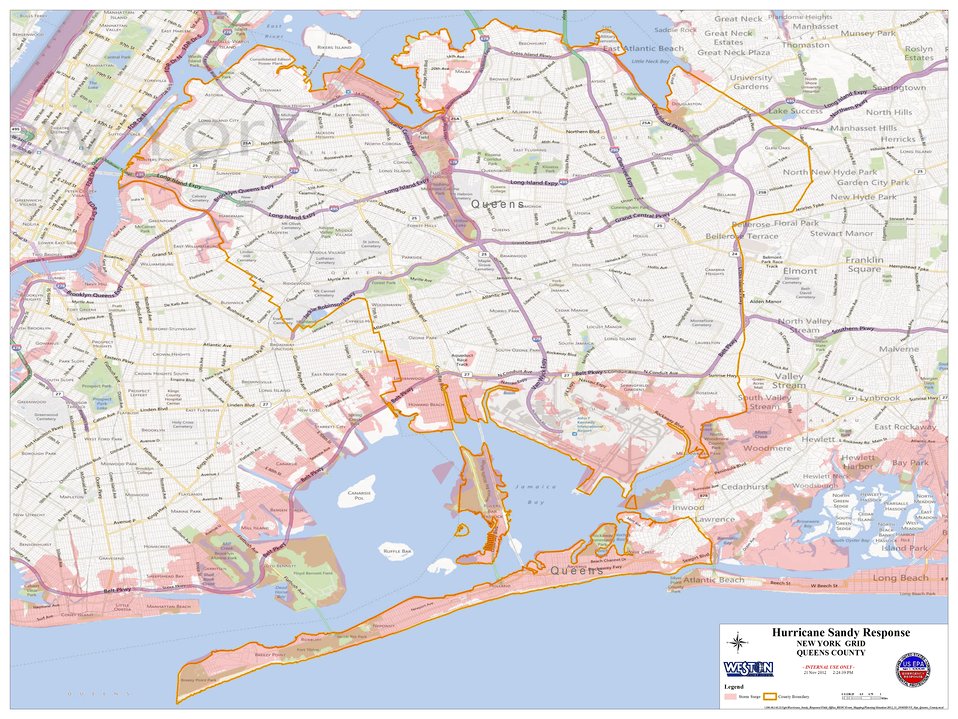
Hurricane Sandy Hazardous Waste Pickup Sites - Queens County

We're working with the New York City Department of Sanitation to collect and properly dispose of potentially hazardous common household products from flood-damaged homes and residences in New York City through Dec. 2, 2012. Here's the map for Queens County.